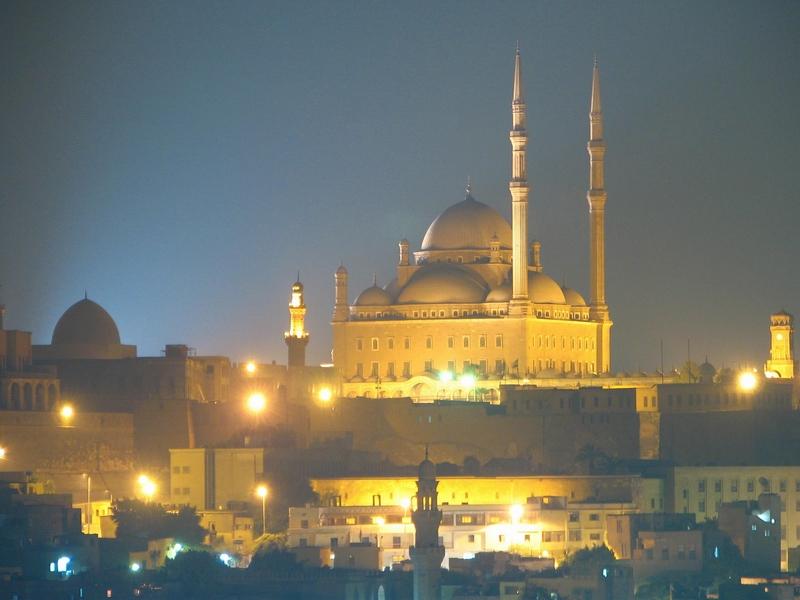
قلعة صلاح الدين الأيوبي بالقاهرة (ليلاً)